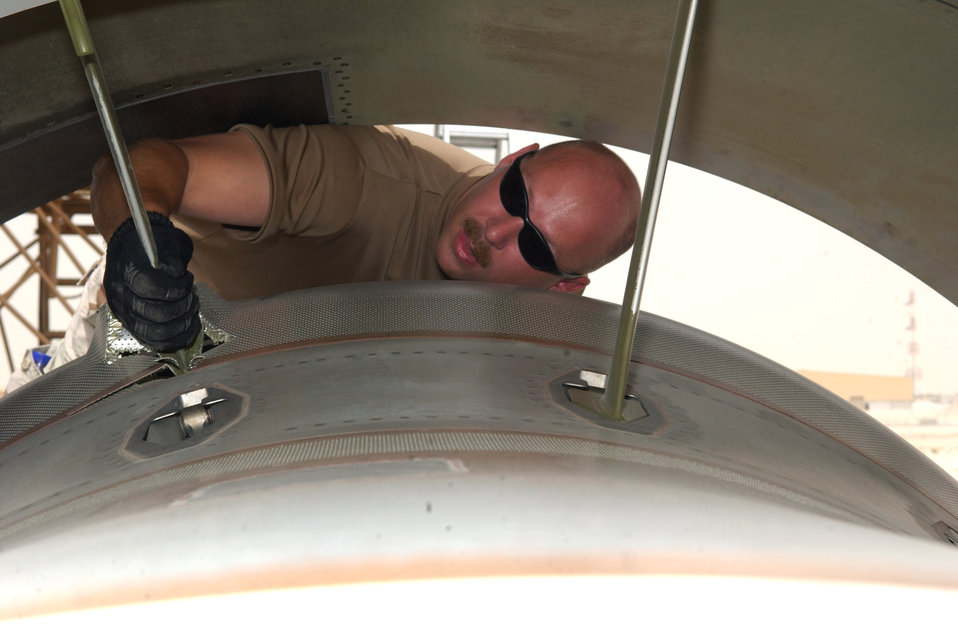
Strategic maintenance gives Airmen diverse experience

Tech. Sergeant Robert Miller inspects damage to a C-17 thrust reverser door. Sergeant Miller is a propulsion technician deployed from McChord Air Force Base, Wash., to work with the 8th Expeditionary Air Mobility Squadron at this desert base.